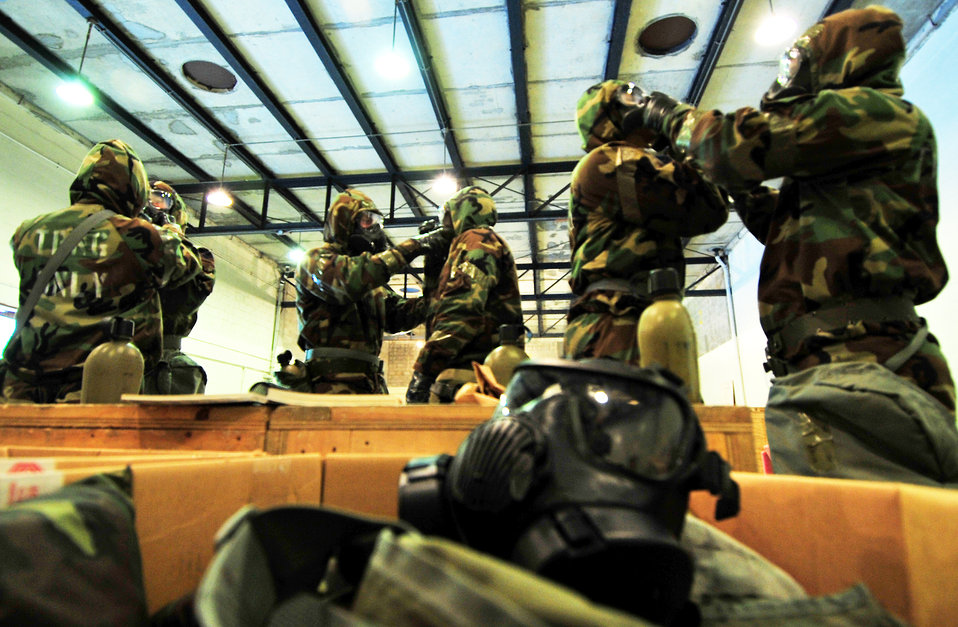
Kadena Airmen train to 'survive'

Members of the 18th Munitions Squadron take part in the